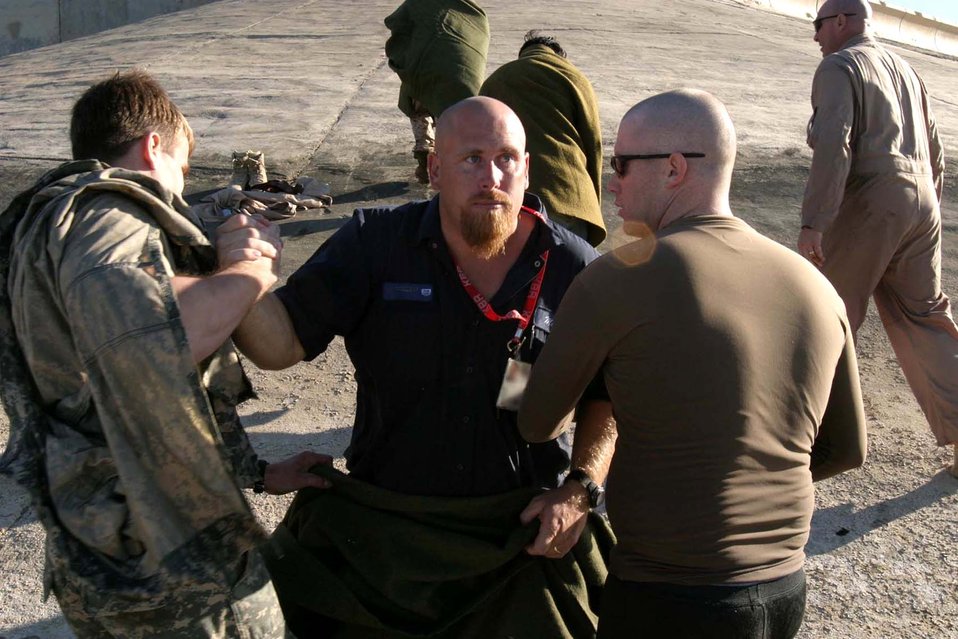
Chilling rescue: Agent saves downed helicopter crew

Air Force Office of Special Investigations Special Agent Jim Collins (right) comforts a civilian contractor after rescuing him after the contractor jumped out of a Marine CH-46 Sea Knight helicopter that crash landed Dec. 3, 2006, in Lake Quadisiya in Iraq. Special Agent Collins and several others witnessed the crash in the 50-degree waters of the lake.